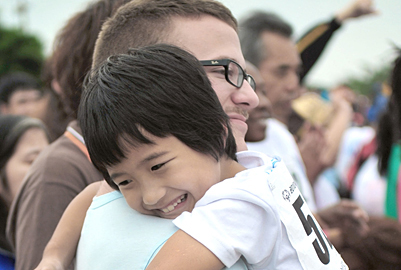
Kadena Special Olympics creates bond for new Airman

Airman 1st Class Matthew Renfro gives Yuto Uehara a hug for luck before Yuto's next event Nov. 6, 2010, during the Kadena Special Olympics at Kadena Air Base, Japan. Airman Renfro was a volunteer hugger for the event. He is assigned to the 18th Munitions Squadron.